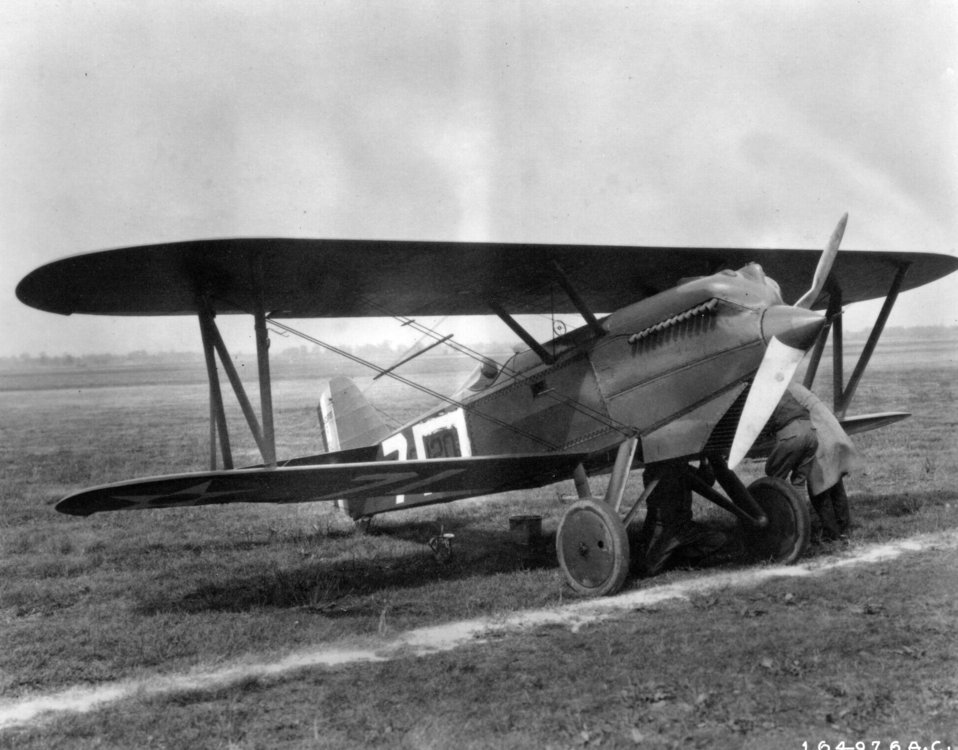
PW-8

EARLY YEARS -- PW-8